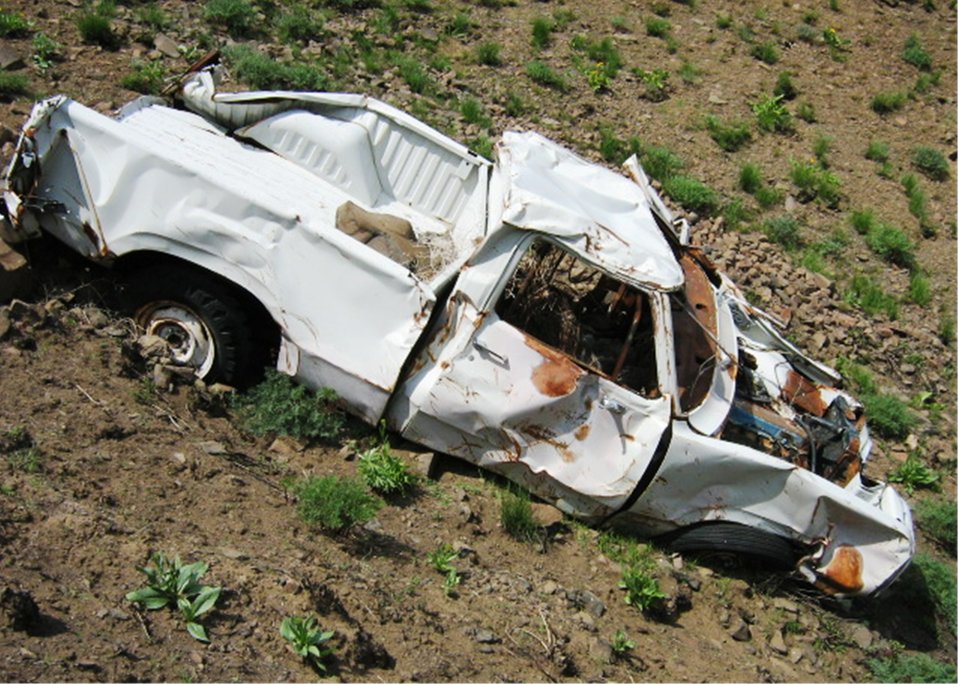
Stimulus funds cleanup of historical mountaintop at Hanford

Rattlesnake Mountain at Hanford’s Arid Lands Ecology Reserve in Washington State